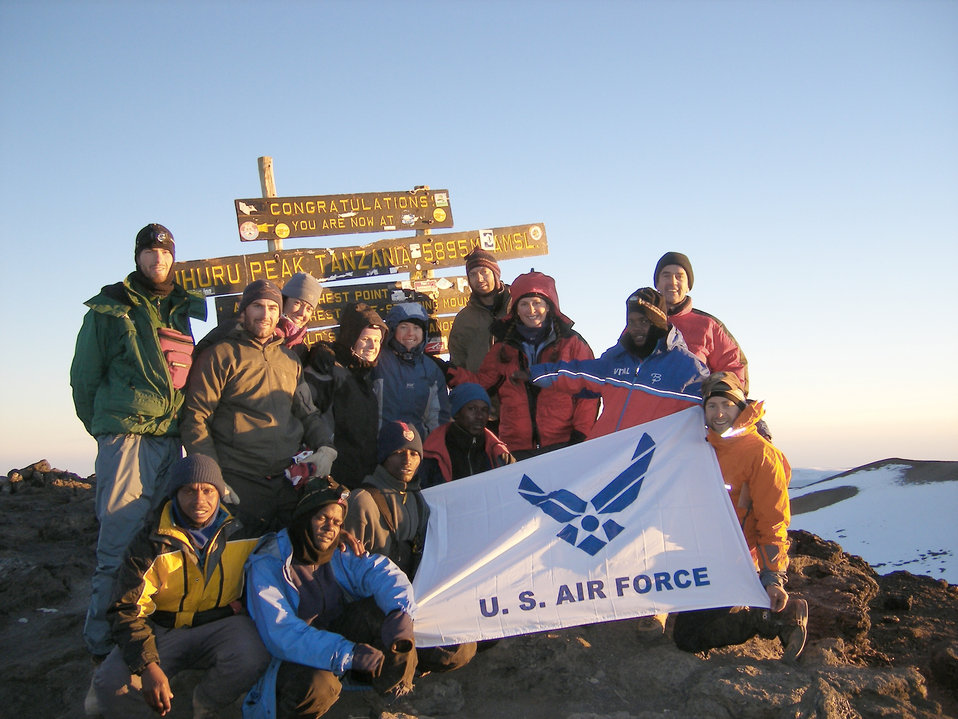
Airmen prepare for Antarctic climb

Capt. Graydon Muller (far left, standing), and Capt. Rob Marshall (far right, kneeling) pose at the summit of Mt. Kilimanjaro, the highest peak in Africa, as part of the U.S. Air Force Seven Summits Challenge in July 2006. The U.S. Air Force Seven Summits Challenge is an endeavor for Air Force members to carry the Air Force flag to the highest point on each continent and to be the first U.S. military group to conquer all seven peaks. Captains Muller and Marshall will depart Nov. 24, 2010 to attempt the group?s fifth summit, Vinson Massif in Antarctica. Captain Muller is a member of the 6th Special Operations Squadron. Captain Marshall is a member of the 8th Special Operations Squadron.